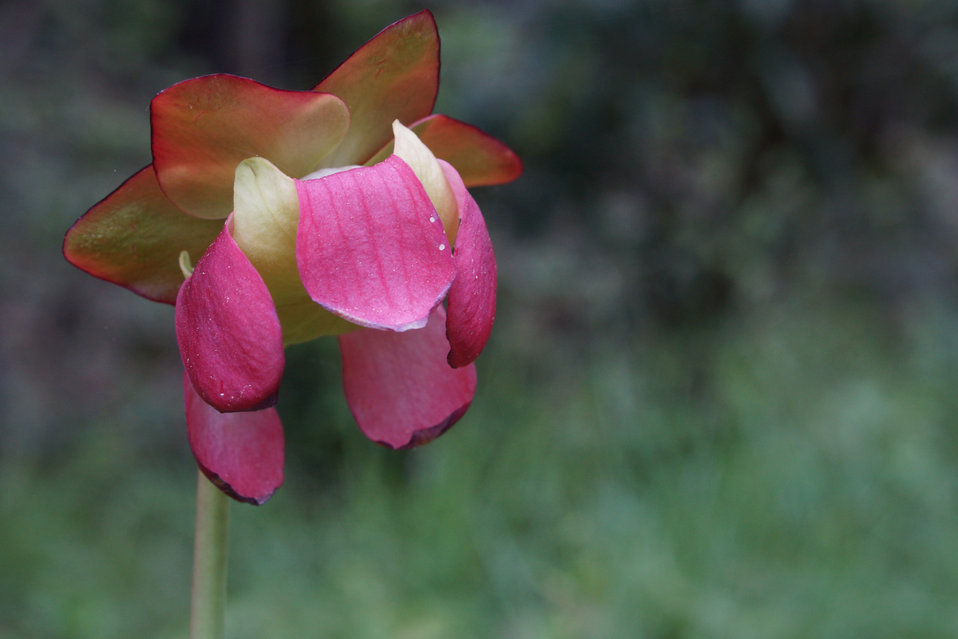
Mountain purple pitcher plan flower

In May, bog conservationists from Tennessee, North Carolina, and Georgia convened in the north Georgia mountains for the spring, 2014 meeting of the Bog Learning Network. The event provided an opportunity for biologists to see, first hand, the result of management efforts at two north Georgia bogs. More importantly, the outings provided an opportunity to share innovative approaches to bog management, such as the role of the Georgia Plant Conservation Alliance in conserving rare plants and coordinating a cadre of volunteers to work on bog management.

The Bog Learning Network was convened in the winter of 2013 as a way to bring together people working for bog conservation across the Southern Appalachians. Southern Appalachian bogs are one of North America’s rarest habitats and home to many rare plants and animals.